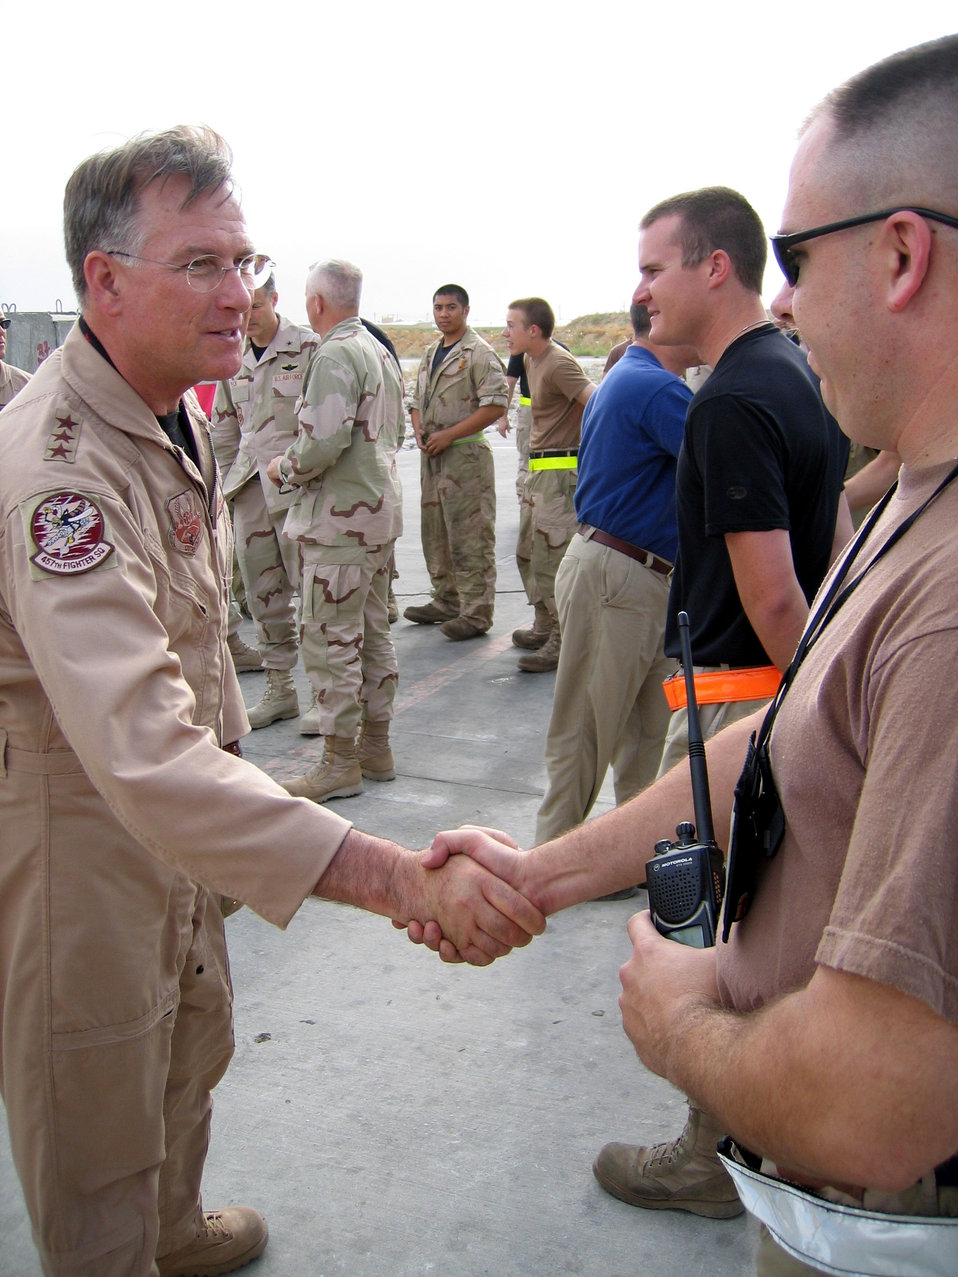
General sees 'seamless' force in Southwest Asia

AFGHANISTAN -- Lt. Gen. John A. Bradley (left), commander of Air Force Reserve Command, met A-10 Thunderbolt II aircraft maintainers recently. The general commanded the Air Force Reserve's 442nd Fighter Wing from July 1989 to January 1993 when the A-10 unit was at Richards-Gebaur Air Force Base, Mo.